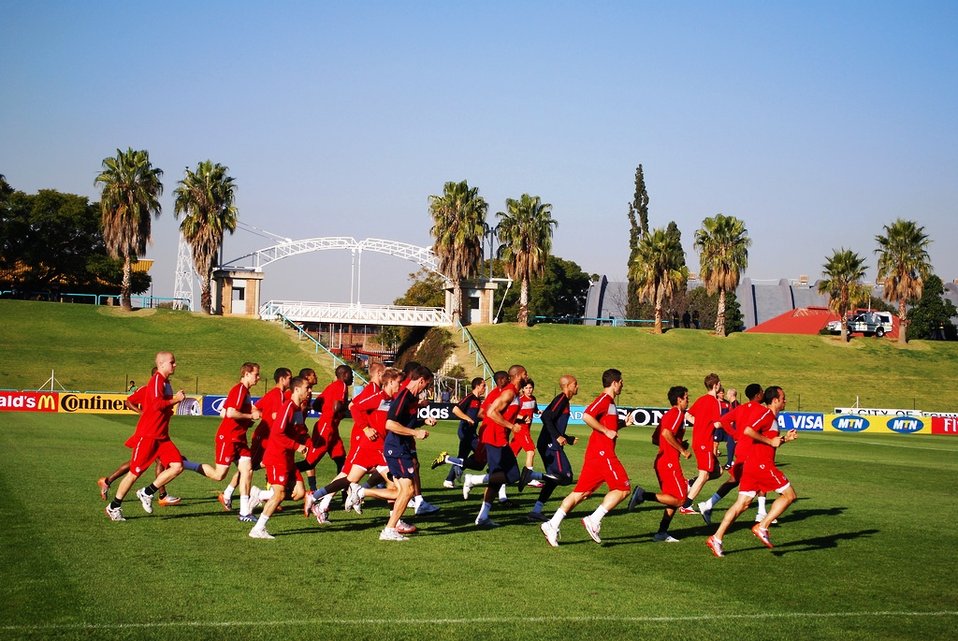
U.S. National Soccer Team Hosts Open Practice Session

The U.S. National Soccer Team hosts an open practice session with South African students and U.S. Mission to South Africa families at the Pliditch Stadium in Pretoria, South Africa, on June 6, 2010. The U.S. National Soccer Team is preparing for the 2010 World Cup in South Africa.